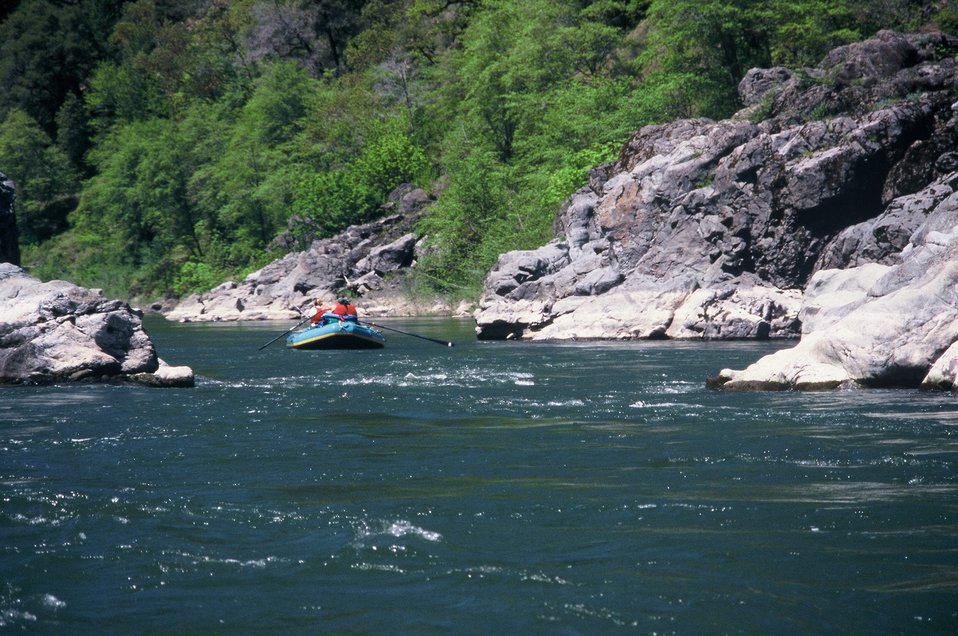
Wild section of the Rogue River from Grave Creek to Foster Bar May 19 to May 22.